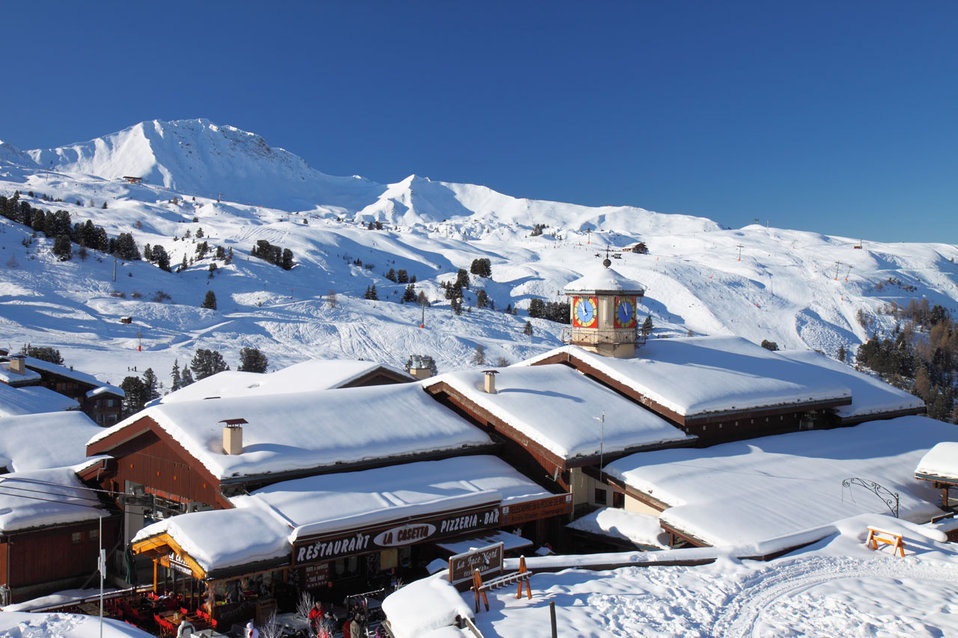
Ski resort with mountains

Belle plagne ski resort in france.